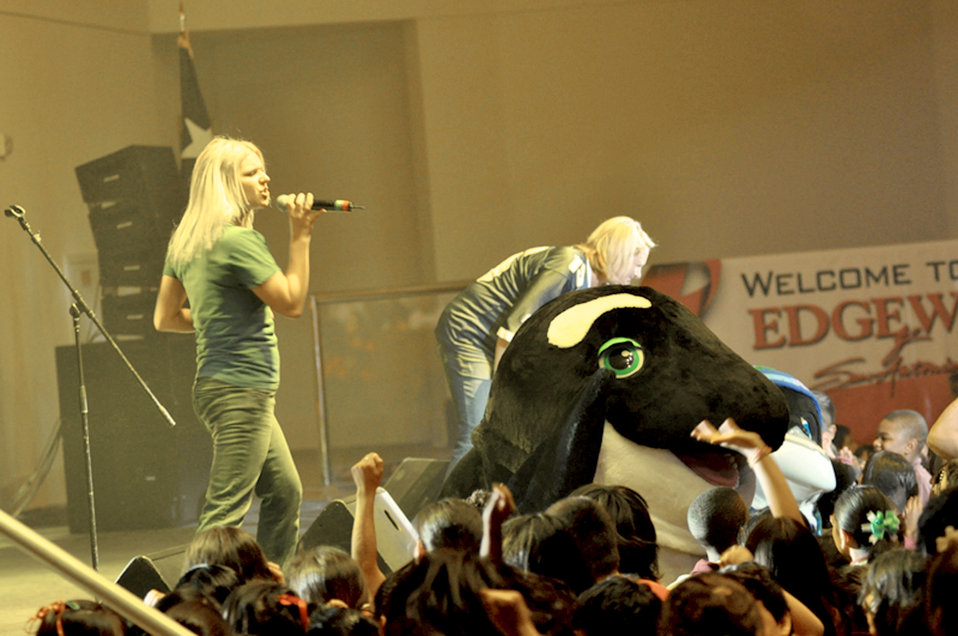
Air Force musicians take a visible stand against drug abuse

Members of Air Force's Top Flight musical group interact with hundreds of school children during a performance Oct. 19, 2010, at the Edgewood Performing Arts Theater in San Antonio. The popular music ensemble of the Band of the West from Lackland Air Force Base, Texas, performed six shows in support of Red Ribbon Week. Red Ribbon Week is a national observance to raise awareness in youth to make the right decisions about substance abuse and inform them on the dangers of drugs. Nearly 10,000 school-aged children attended the concerts.